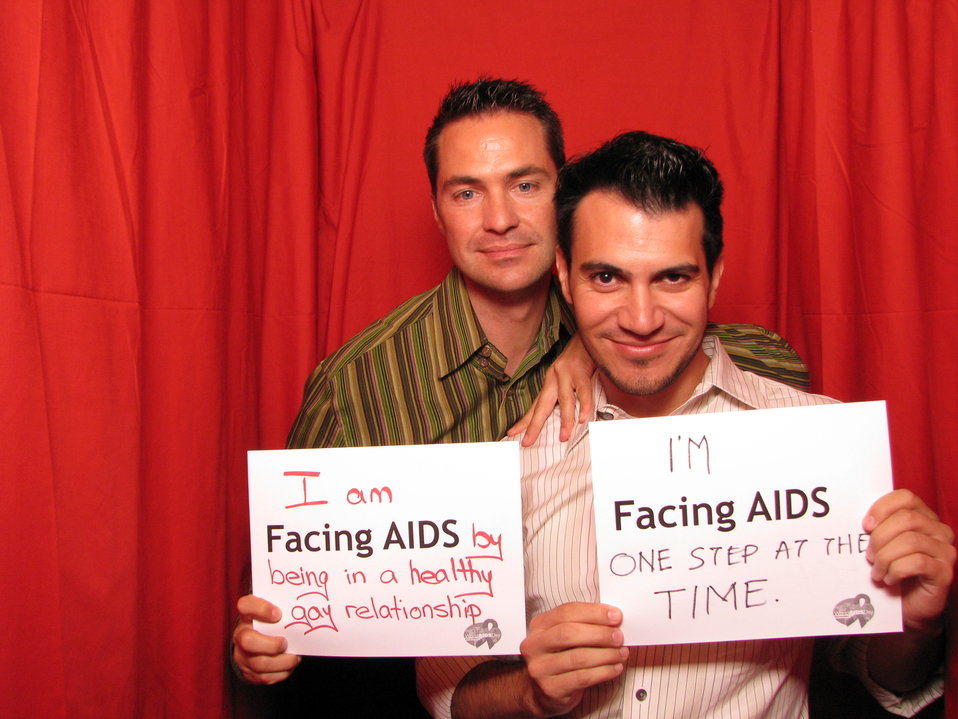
I am FACING AIDS by being in a healthy gay relationship. I'm FACING AIDS one step at a time.

From the AIDS.gov photo booth at the U.S. Conference on AIDS, September 2010 (Orlando, FL).